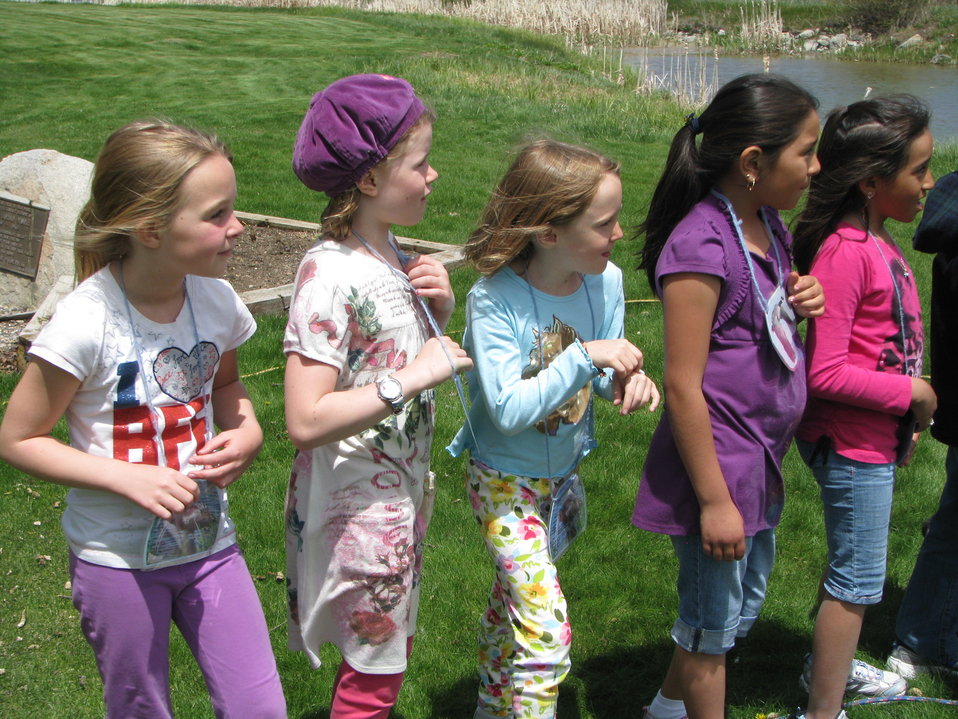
Ready, Set, Go!

Players in a game that demonstrates some of the hazards of migration carefully listen to the next set of instructions during an environmental education program on the lawn of the Jackson Hole & Greater Yellowstone Visitor Center.